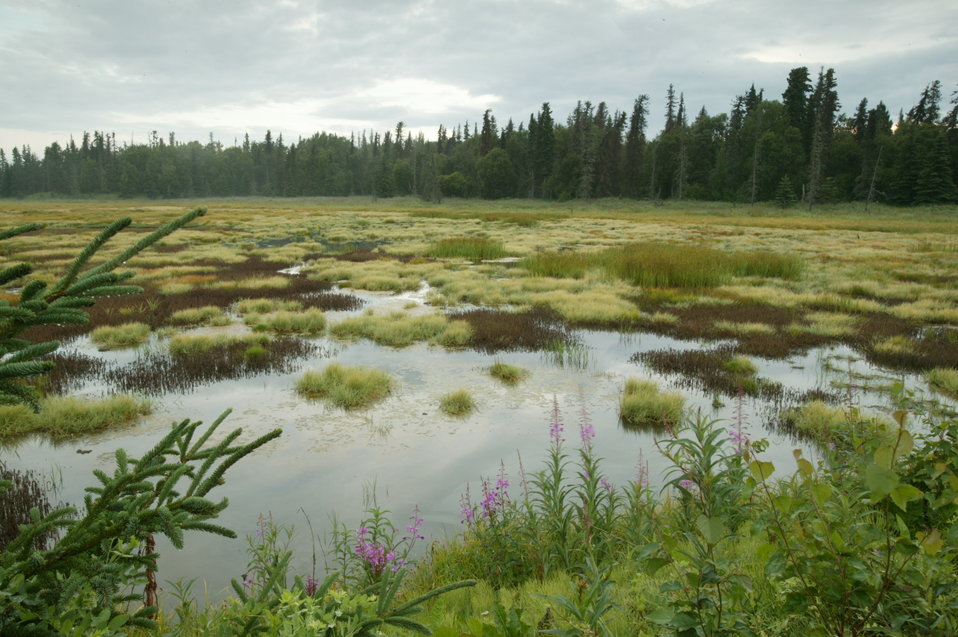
Kenai Wetlands

Fireweed and spruce highlight this bog near Skilak Lake on the Kenai National Wildlife Refuge. Waterfowl abound on the refuges thousands of ponds, wetlands, and lakes.Moose are often seen browsing in this terrain. Raptors also frequent these areas looking for a careless rodent or bird.